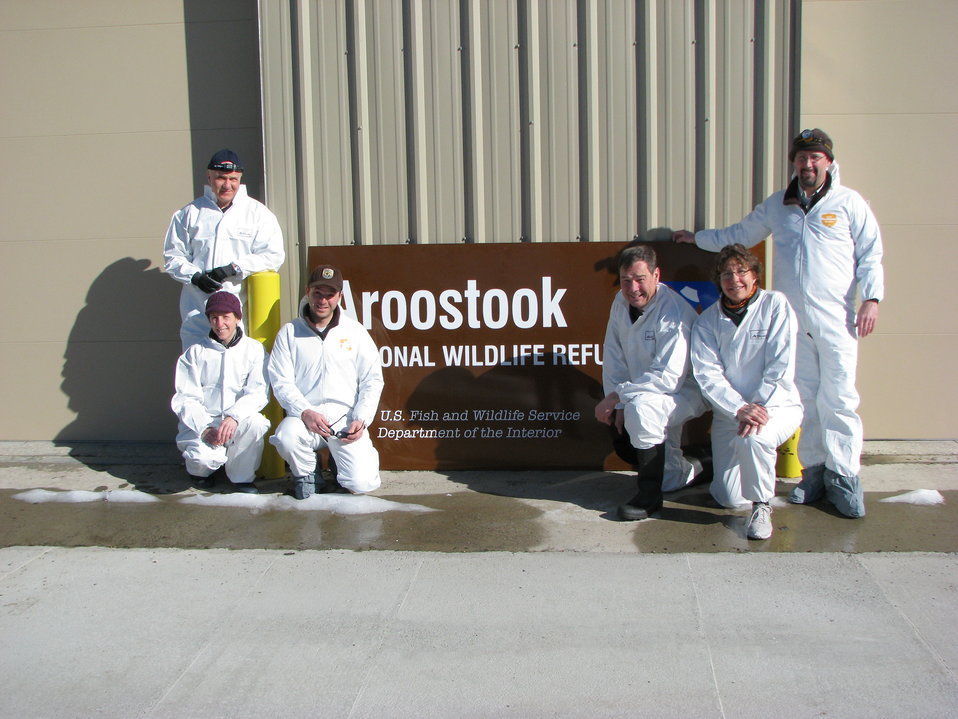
Partners in the project

From left to right:
Carl Herzog (NYDEC), Alyssa Bennett (VDFG), Steve Agius (USFWS), Scott Darling (VDFG), Susi vonOettingen (USFWS), Ray Brown (MDIFW)

Photo credit: USFWS/Susi vonOettingen